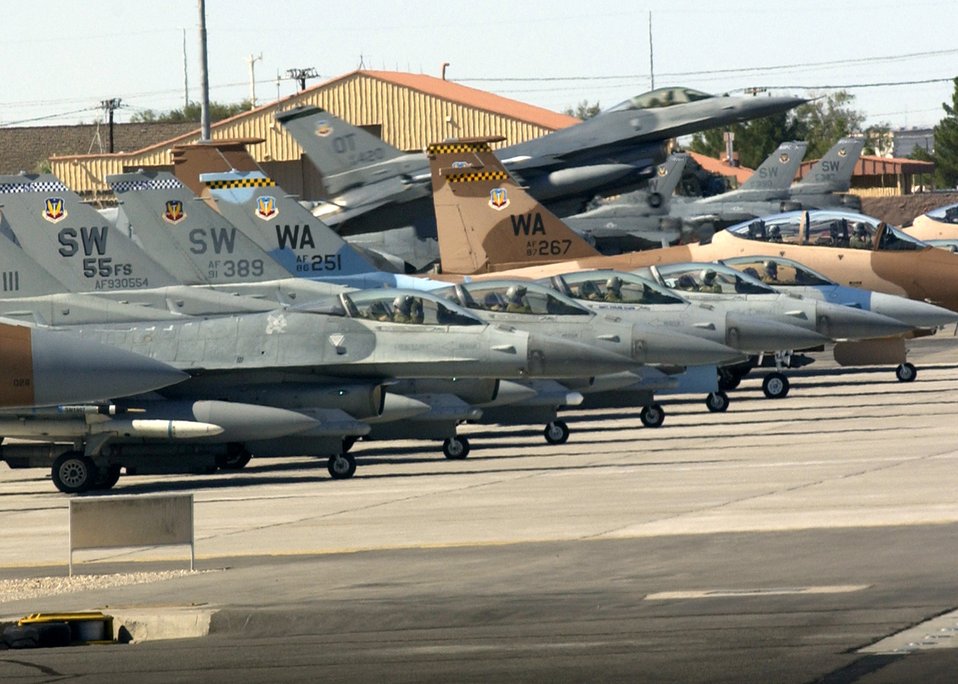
Airmen hone skills at Red Flag

An F-16 Fighting Falcon takes off while other aircraft go through pre-flight checks Oct. 19 during Red Flag 07-1 at Nellis Air Force Base, Nev. Red Flag tests aircrew warfighting skills in realistic combat situations.